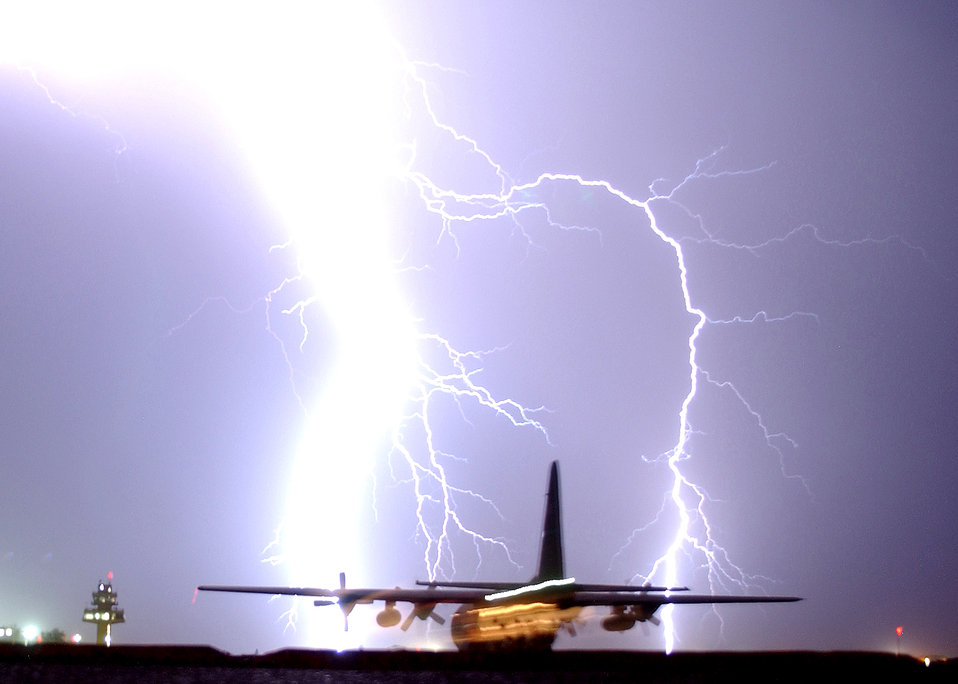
Nature's fireworks

Lightning strikes near the control tower and a taxing C-130 Hercules at Balad Air Base, Iraq, on Tuesday, May 16, 2006. Balad handles more than 750 cargo flights each month and is the Department of Defense's busiest single runway. Using C-130s to fly in-theater airlift missions has reduced the number of ground convoys and troops exposed to roadside bomb attacks.